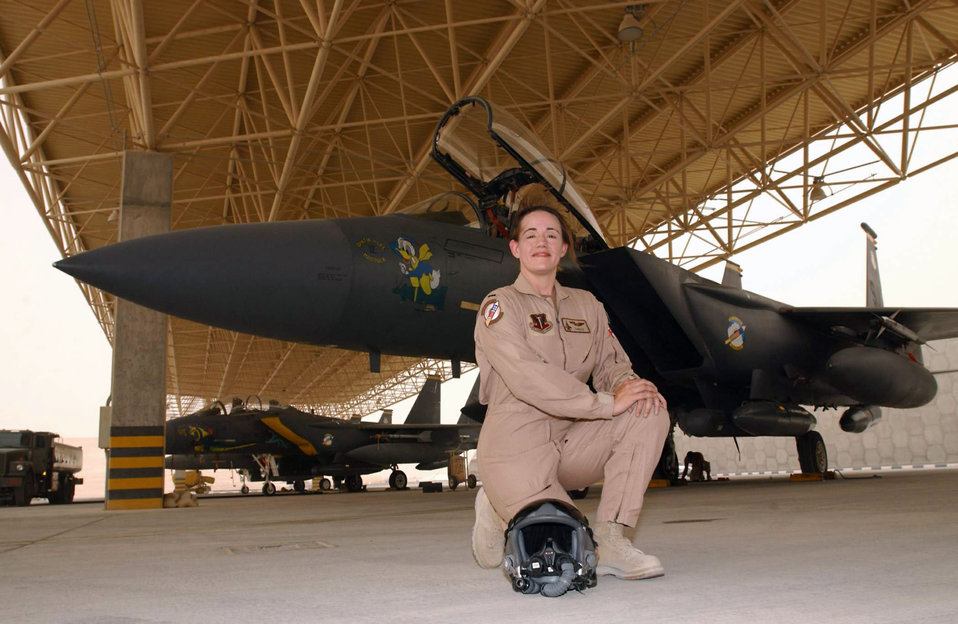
Julie Ayers

OPERATION IRAQI FREEDOM -- First Lt. Julie Ayers, a 336th Expeditionary Fighter Squadron weapons system officer, arrived in Southwest Asia with less than two years in the back seat of the F-15E Strike Eagle. Operation Iraqi Freedom has given her valuable experience.